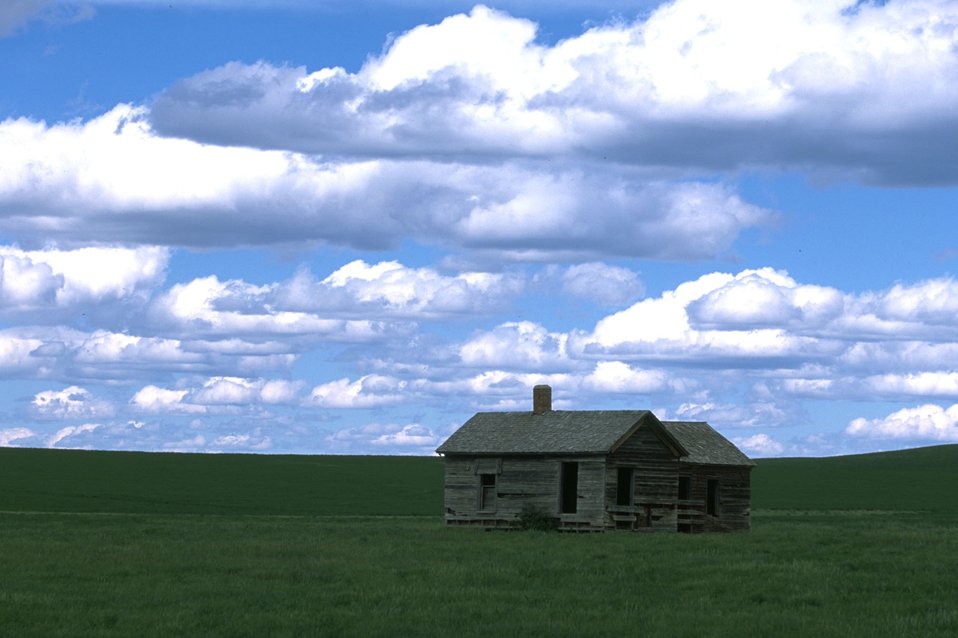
Remains of a homestead on the prairies of Montana